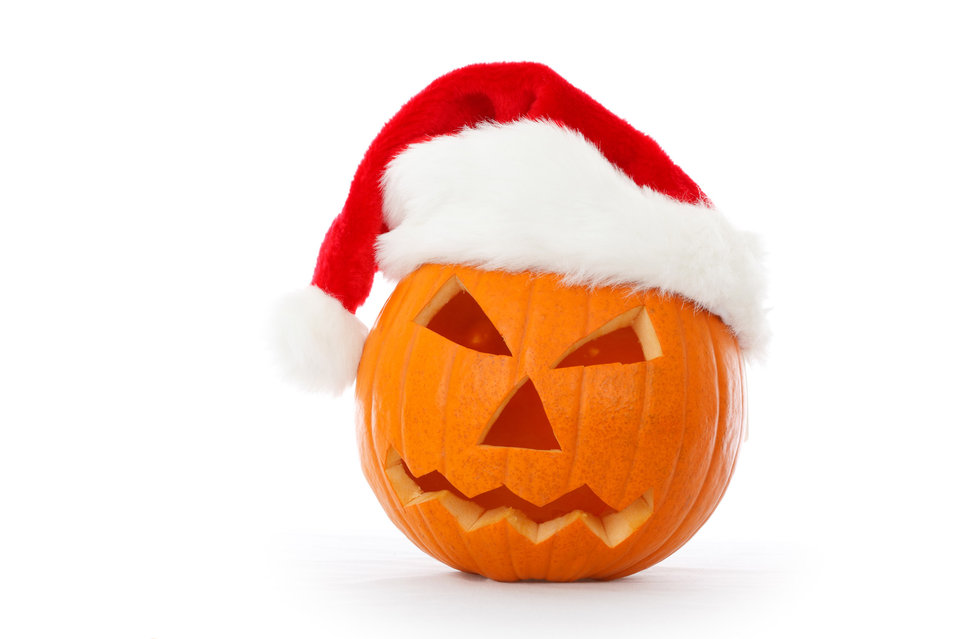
Christmas jack-o-lantern

Jack-o-lantern dressed as santa. kind of "the nightmare before christmas" style..